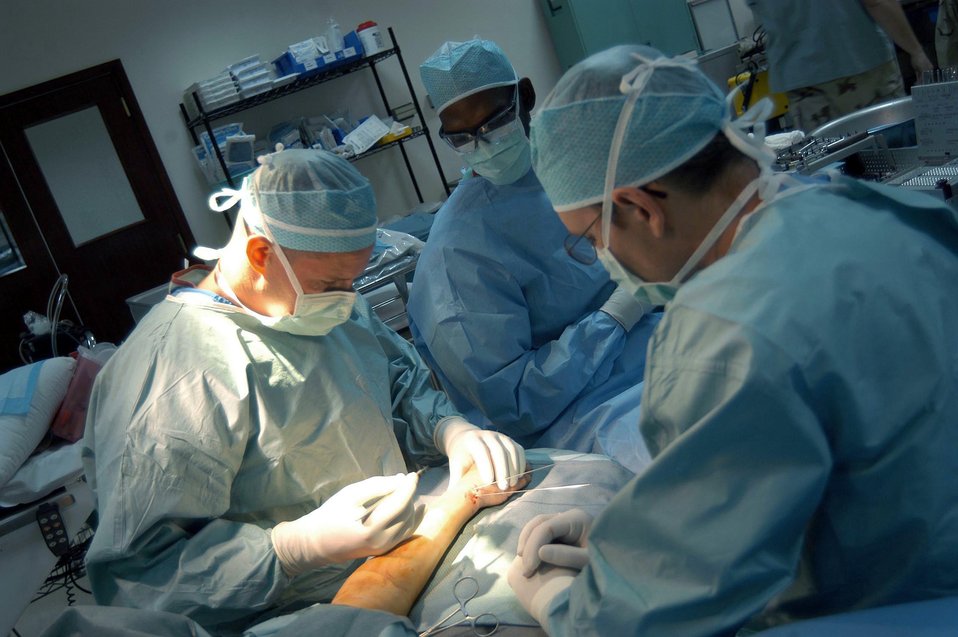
SOUTHWEST ASIA -- Maj. (Dr.) Warren Kadrmas prepares to make an incision to fix a patient's fractured wrist. He is an orthopedic surgeon assigned to a mobile-field surgical team at a forward-deployed location. Dr. Kadrmas is deployed from Lackland Air Force Base, Texas.